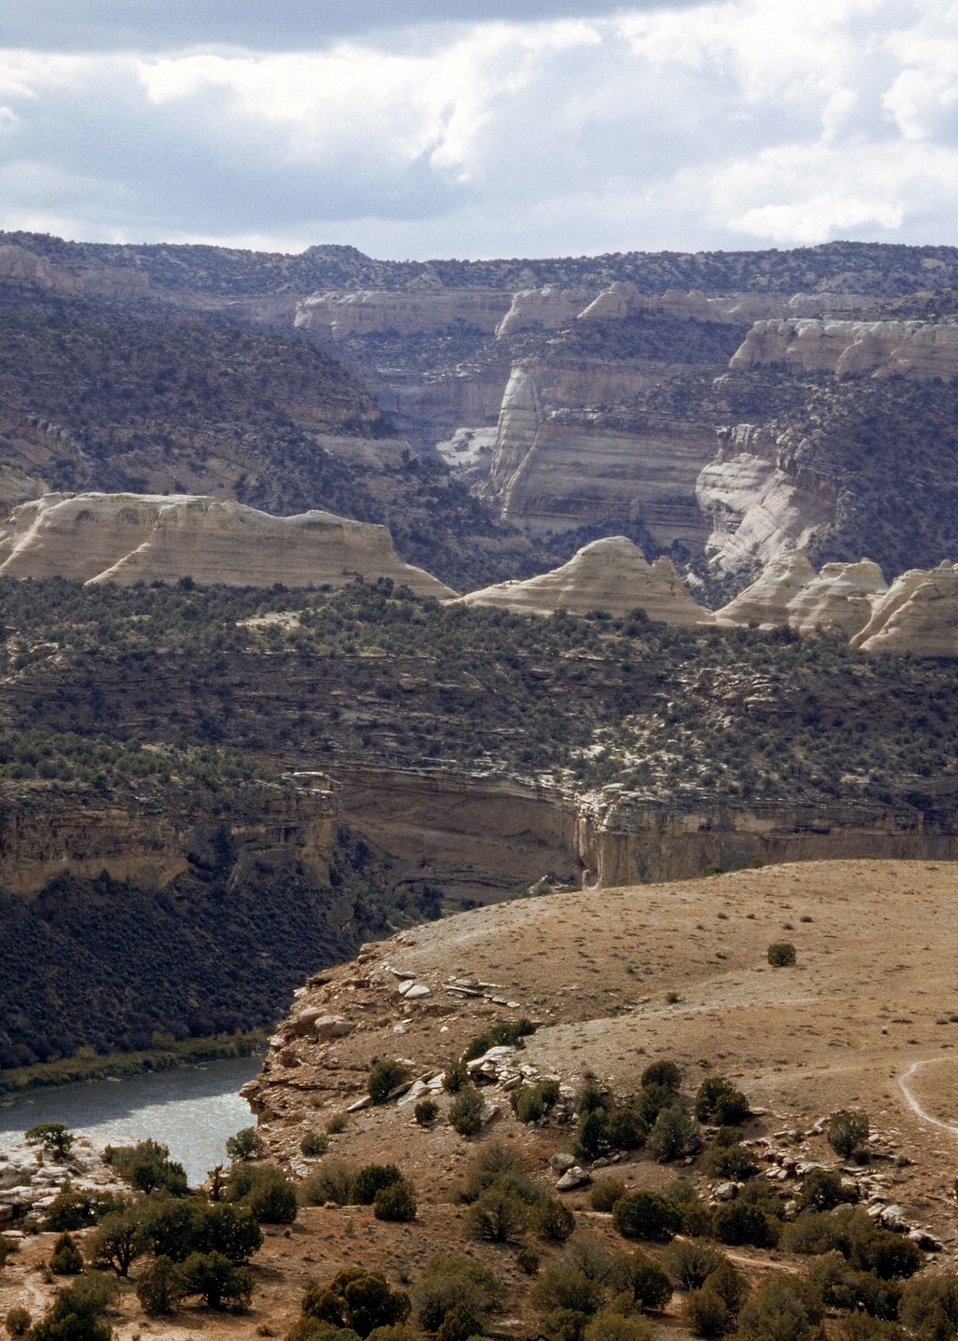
Canyon with river